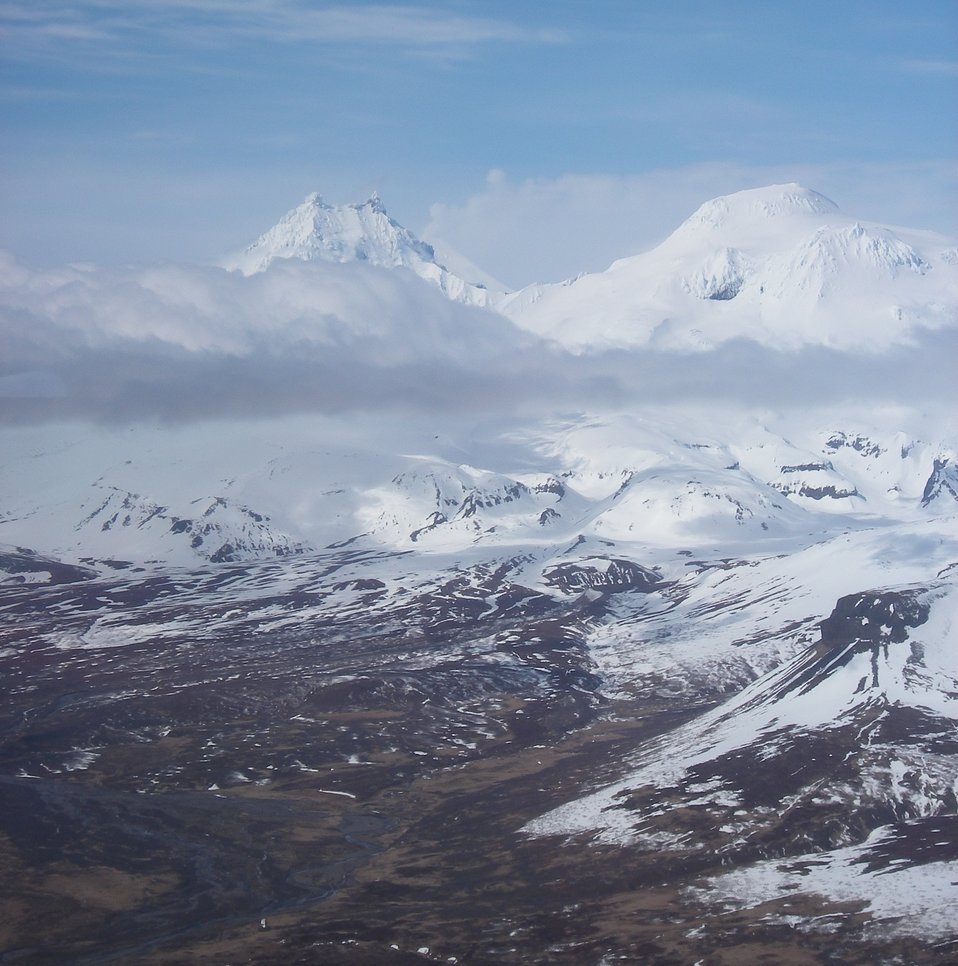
Isanotski and Roundtop Volcanoes

Unimak Island, Alaska Maritime National Wildlife Refuge